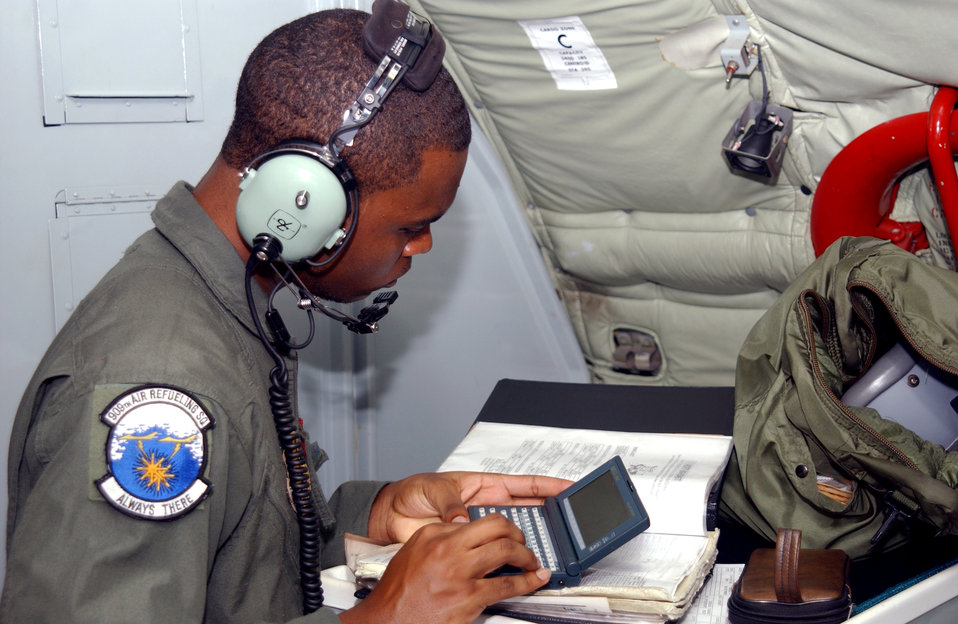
Calculations

ANDERSEN AIR FORCE BASE, Guam -- Airman 1st Class Corvus Lowery calculates the weight and balance for his aircraft April 25. Lowery is a boom operator assigned to the 909th Air Refueling Squadron from Kadena Air Base, Japan, and is here for Tandem Thrust '03, an exercise conducted in the Mariana Islands. The exercise includes forces from the United States, Canada and Australia.